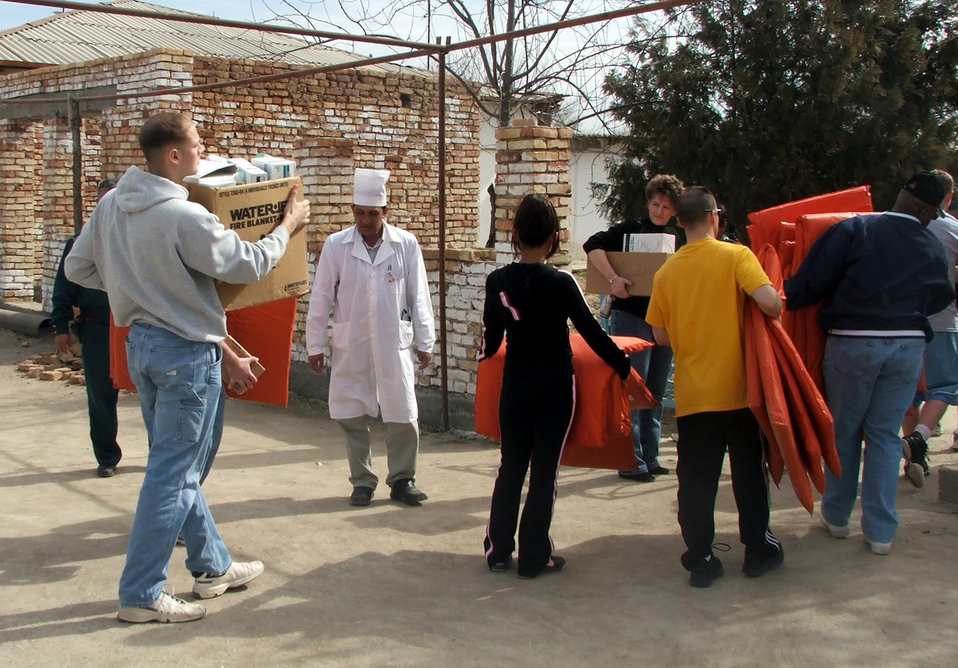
Airmen connect with Uzbeks through donations, volleyball

KHANABAD, Uzbekistan -- Airmen and Soldiers from nearby Karshi-Khanabad Air Base bring donated medical supplies to the local clinic during a humanitarian aid visit here March 3. The servicemembers visited the village clinic and the school where they played a volleyball game and handed out donations.